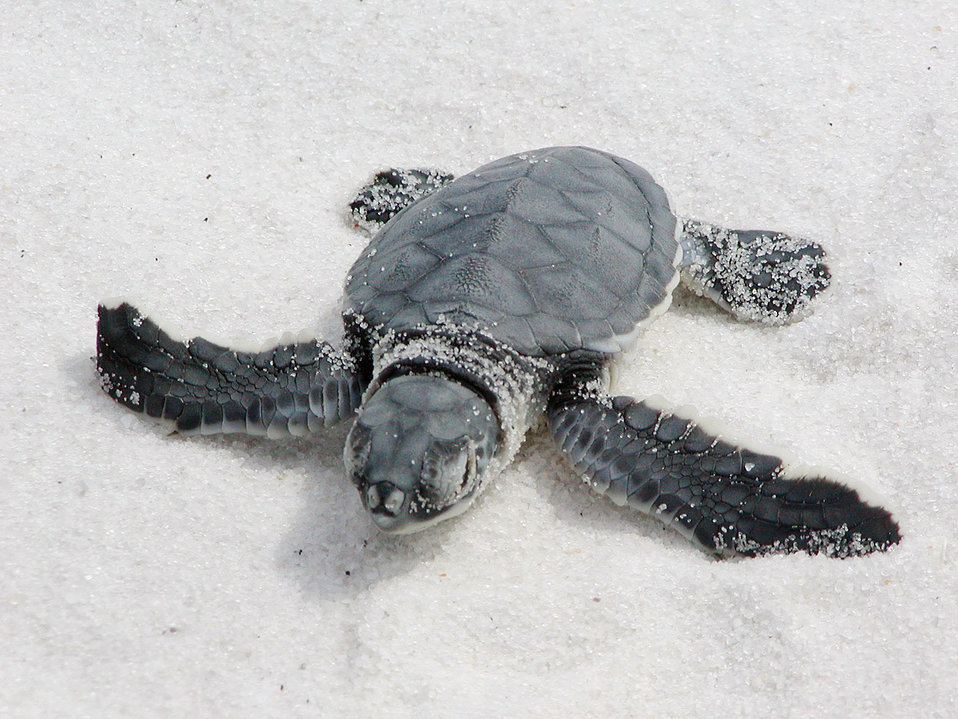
Turtle patrol

EGLIN AIR FORCE BASE, Fla. (AFPN) -- If they reach adulthood, these baby green sea turtles may reach a size of six feet long and weigh up to 450 pounds. The shell is smooth and is colored gray, green, brown and black. Hatchlings are black on top and white on the bottom. Age at sexual maturity is estimated at 20-50 years.